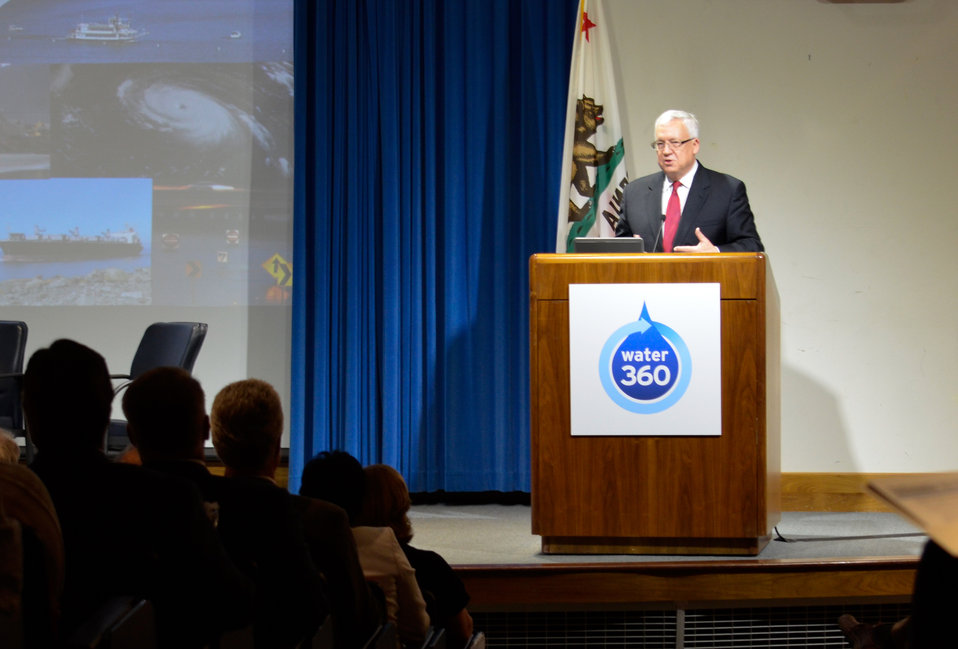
Corps civil works director at Water 360 summit

Steve Stockton, U.S. Army Corps of Engineers civil works director, addresses attendees of the Water 360 Integrated Water Management Summit in Sacramento, Calif., April 3, 2013. Hosted by the California Department of Water Resources and the California Water Education Foundation, the summit aims to advance discussion of integrated water management in California. Stockton’s remarks echoed remarks by California water leaders that both infrastructure improvements that provide ecosystem and flood risk reduction benefits are essential to reducing America’s growing flood risk. “I’m here to tell you, what we’ve been doing is unsustainable,” Stockton said. “To have a more resilient and robust society, we’re going to have to have a lot more resiliency built into our infrastructure.”